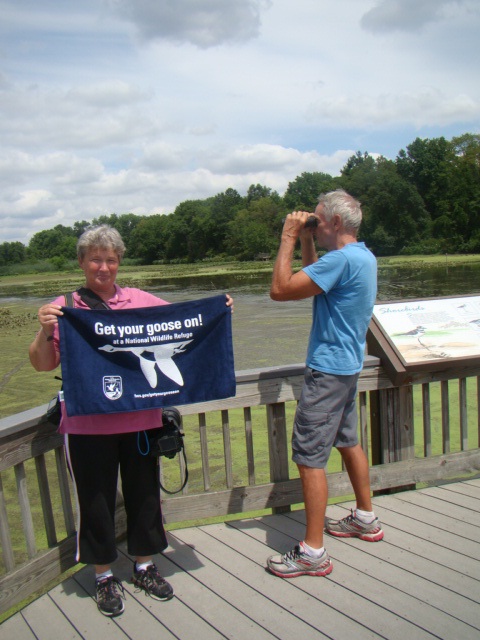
Get Your Goose On!

Birders Kay and George Meng looking at shorebirds while Getting Their Goose On!